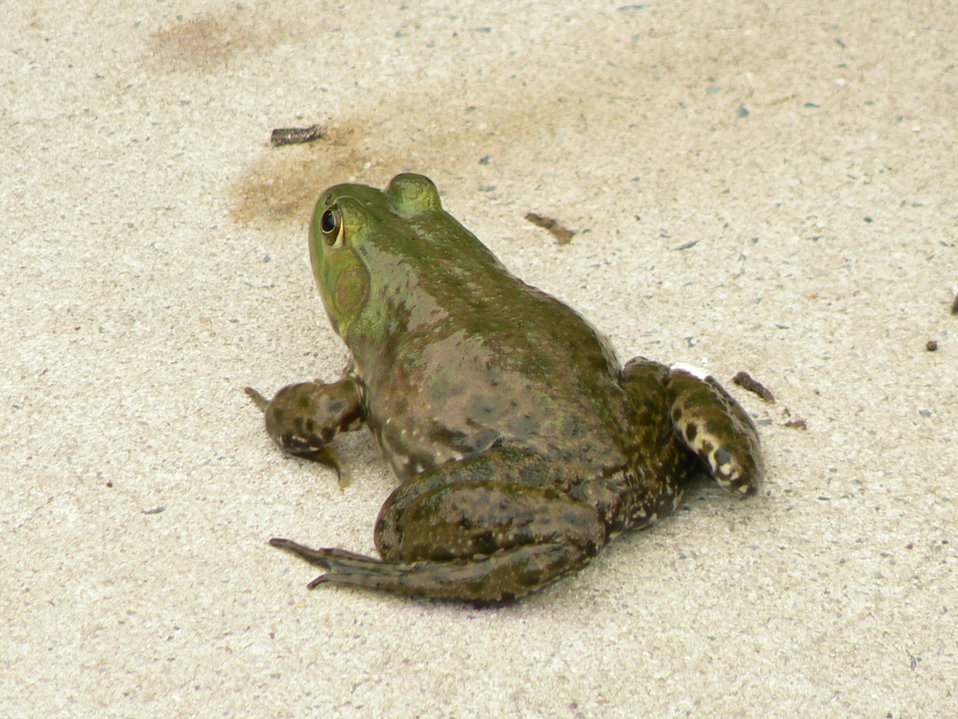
Green frog at Cape May National Wildlife Refuge.